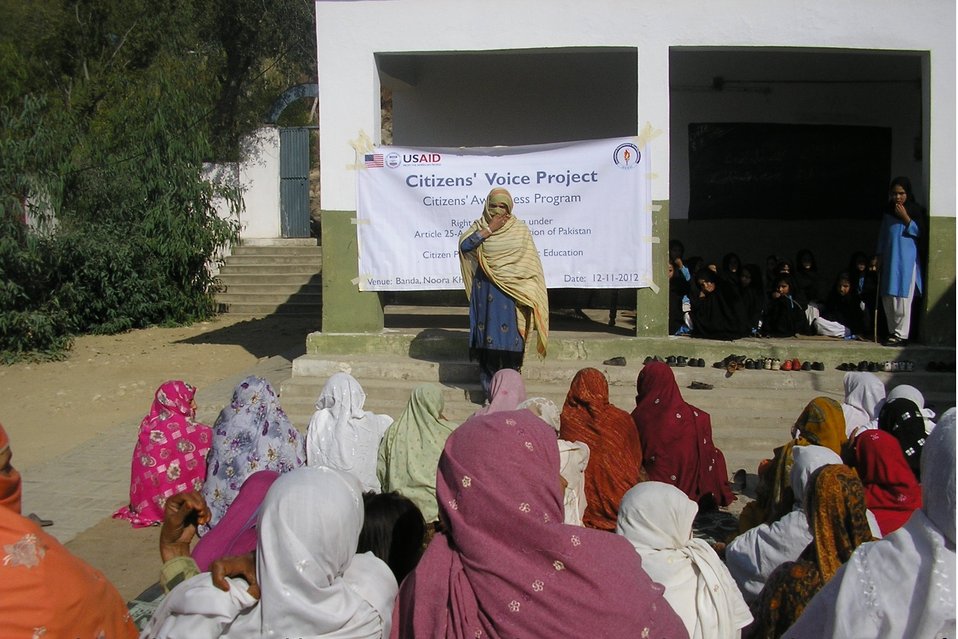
Caption 10 - DEWA - Dir KP - Meeting the Women of the Community for Awarness on Right to Education

A female social organizer of DEWA addresses a community meeting of women in Lower Dir , describing the project objectives and the right to education as part of its education sector reforms initiative under USAID’s Citizens’ Voice Project.